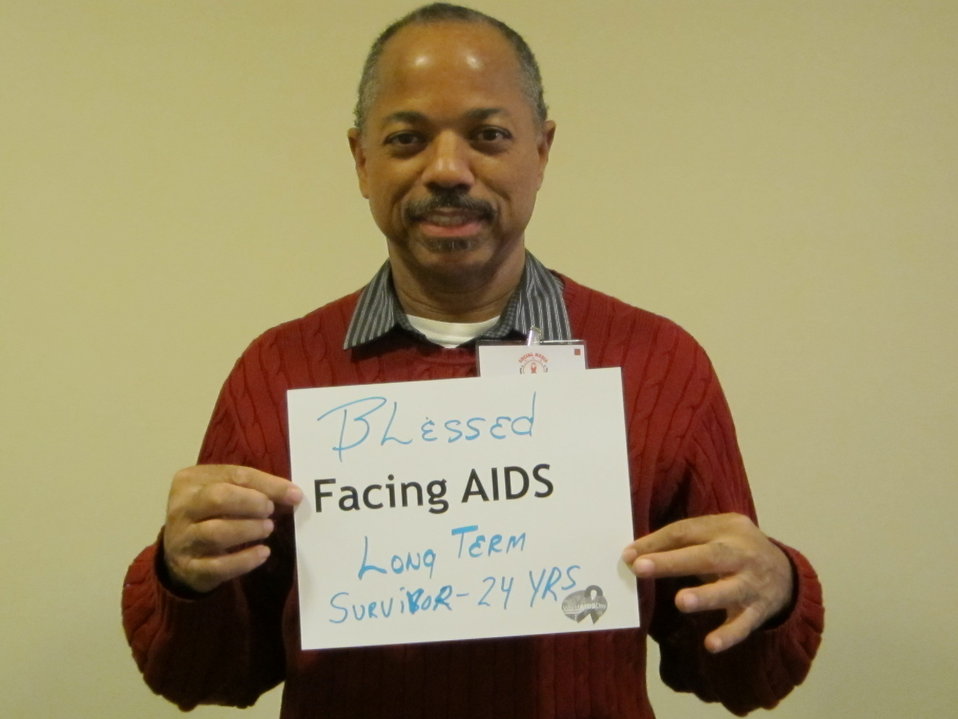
Blessed Facing AIDS long term survivor - 24 years.